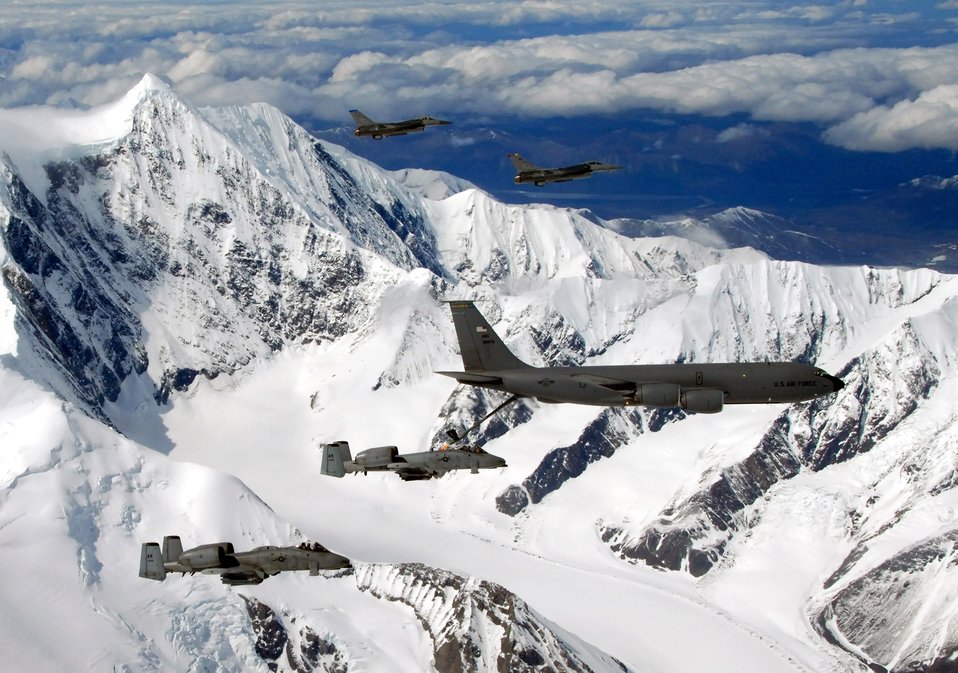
Final flight for fighters

A KC-135 Stratotanker with the Alaska Air National Guard's 168th Air Refueling Wing flies with two F-16 Fighting Falcons from the 18th Fighter Squadron and two A-10 Thunderbolt IIs from the 355th Fighter Squadron May 29 over Alaska. The five aircraft assigned to Eielson Air Force Base, Alaska, flew in formation for the last time due to the deactivation of the 18th and 355th Fighter Squadrons.